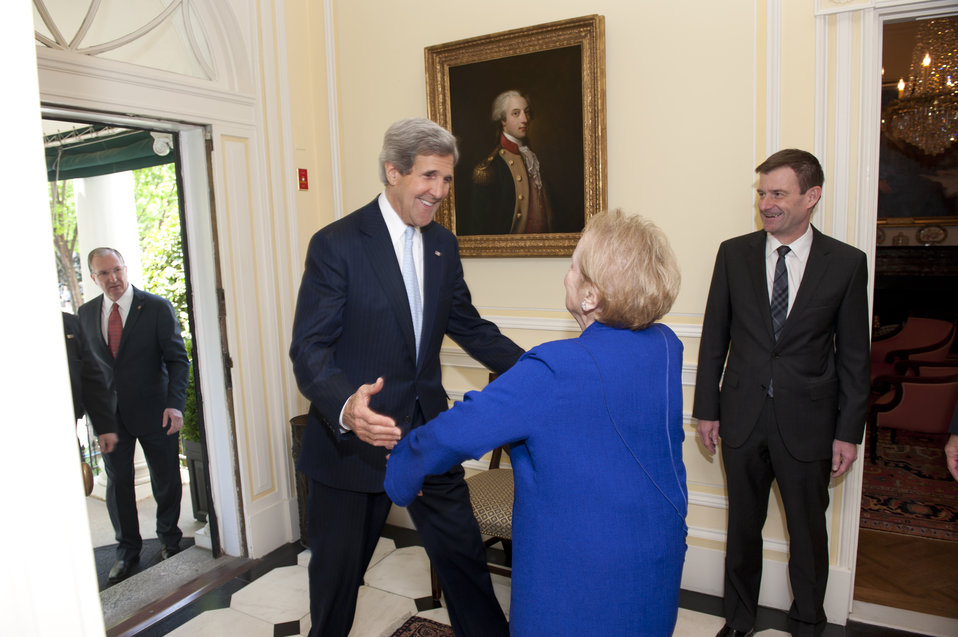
Secretary Kerry Embraces Former Secretary Albright

U.S. Secretary of State John Kerry embraces Former Secretary of State and Chair of Partners for a New Beginning (PNB) Madeleine Albright upon arriving at the Blair House in Washington, D.C., on May 3, 2013.